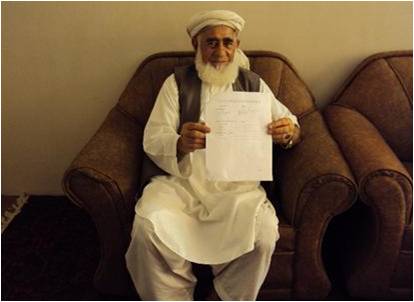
Full-time Public Defenders Arrive